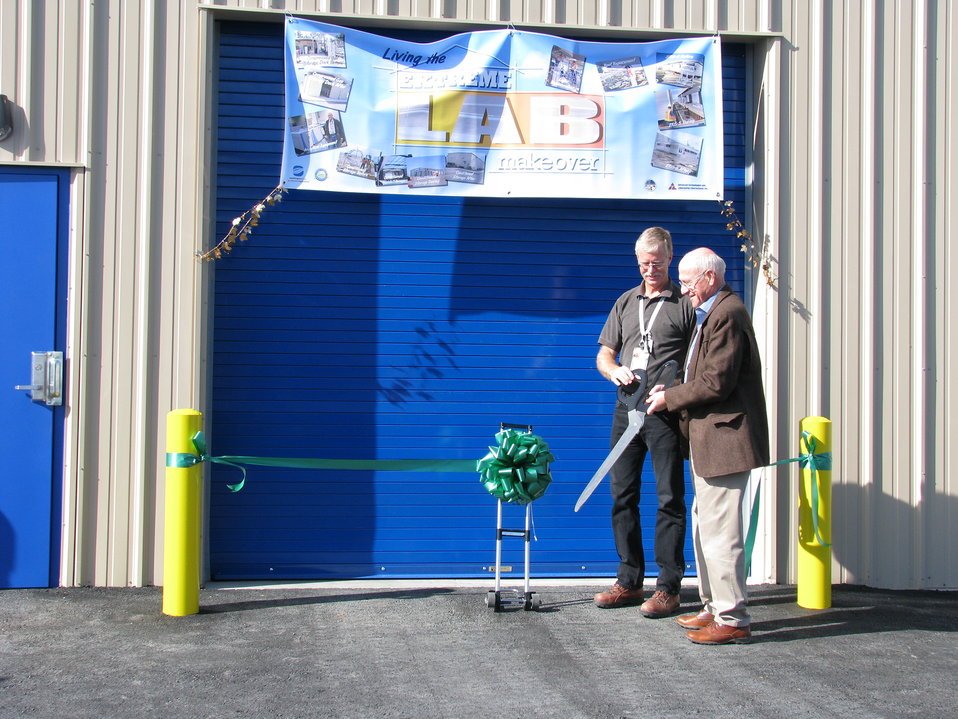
222-S Lab Ribbon Cutting